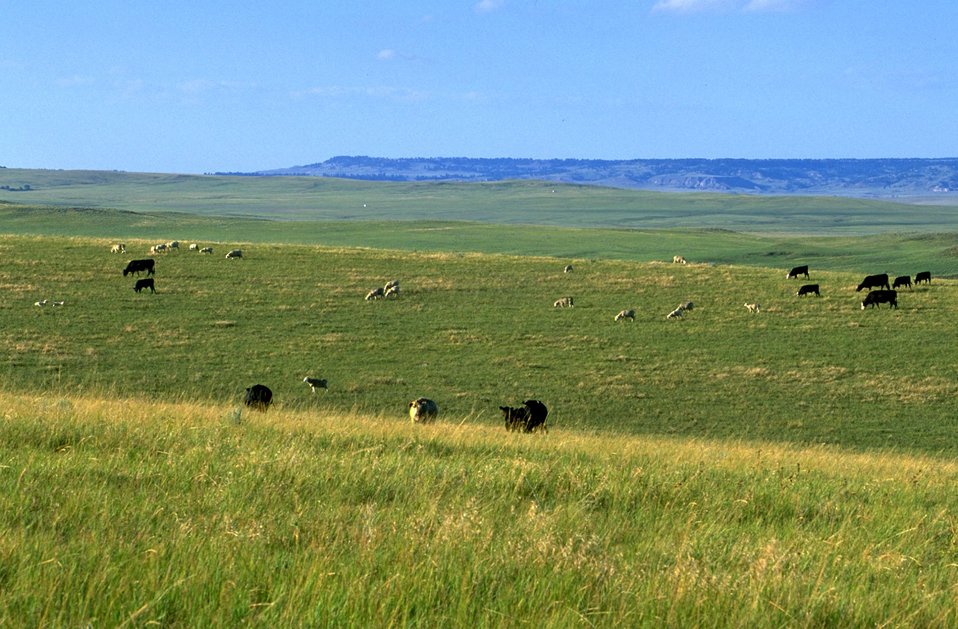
Cattle and Sheep grazing